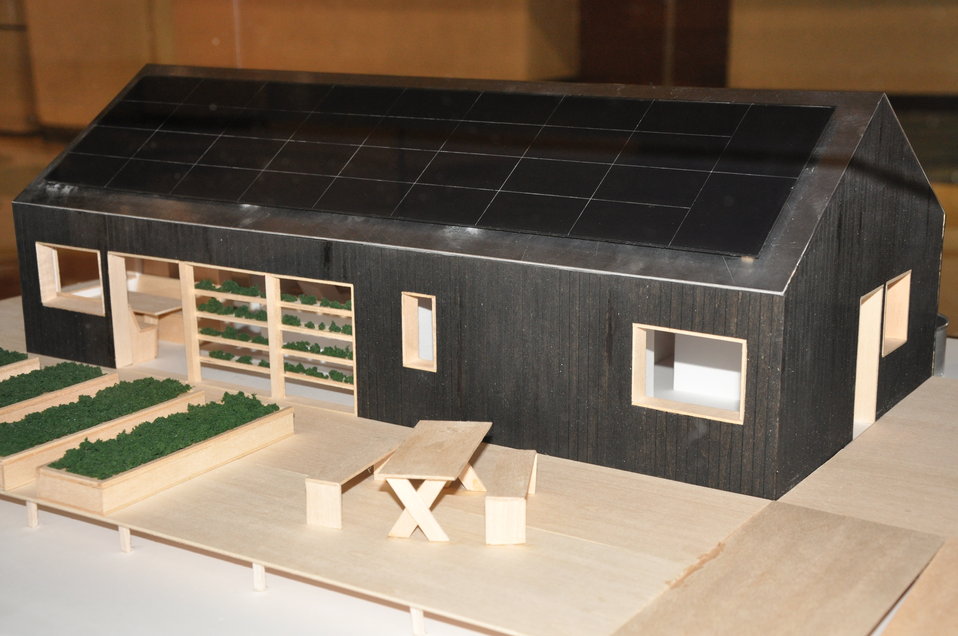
Middlebury College